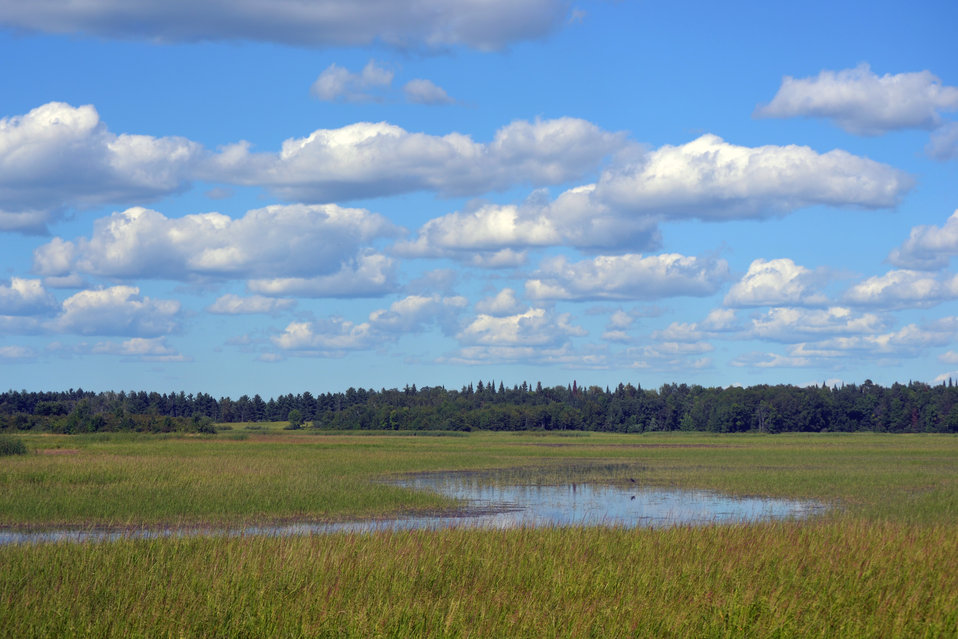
Sky Wetland

Another beautiful day at Tamarac National Wildlife Refuge.